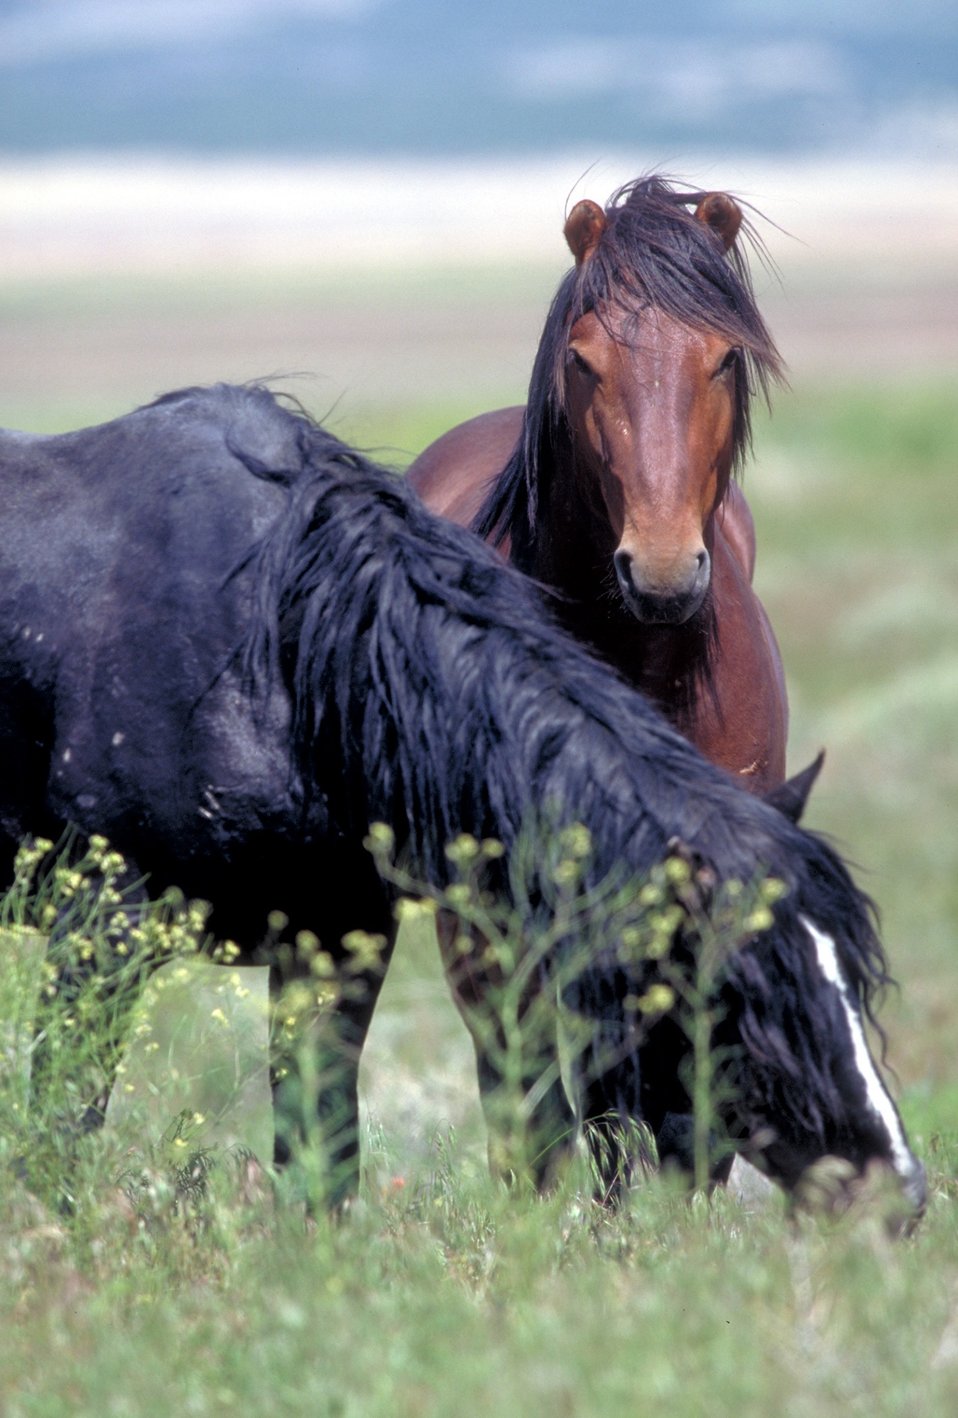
Onaqui Herd near Dugway, Utah.